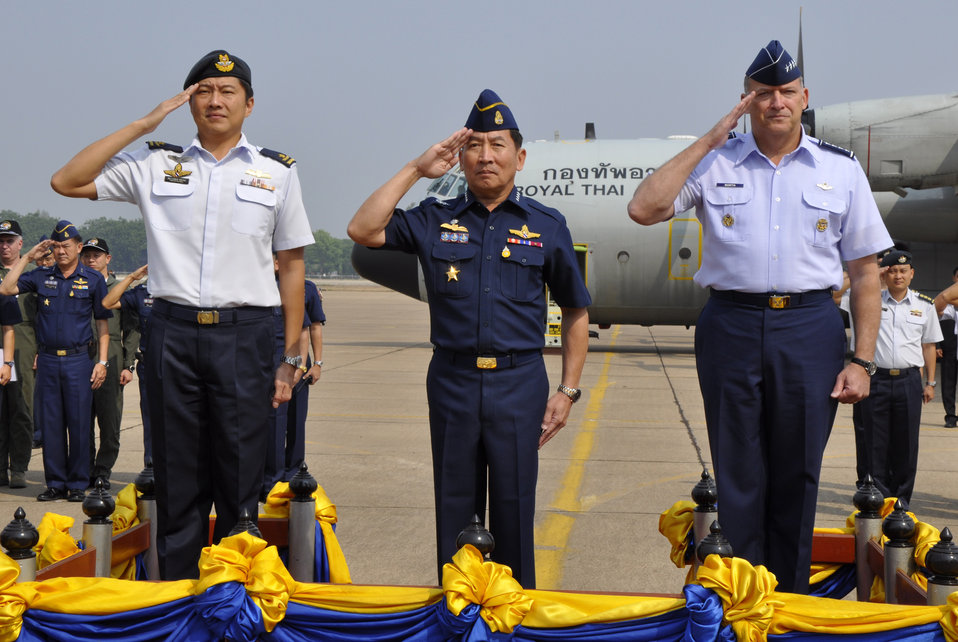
Pacific partners close Cope Tiger with ceremony

Brig. Gen. Ng Chee Meng, Air Chief Marshal Itthaporn Subhawong and Gen. Gary North salute as the Thailand national anthem is played during the Cope Tiger 2010 closing ceremony March 12, 2010, at Korat Royal Thai Air Force Base, Thailand. General Meng is the Republic of Singapore Air Force chief of air force, Air Chief Marshal Subhawong is Royal Thai Air Force commander in chief and General North is the Pacific Air Forces commander.